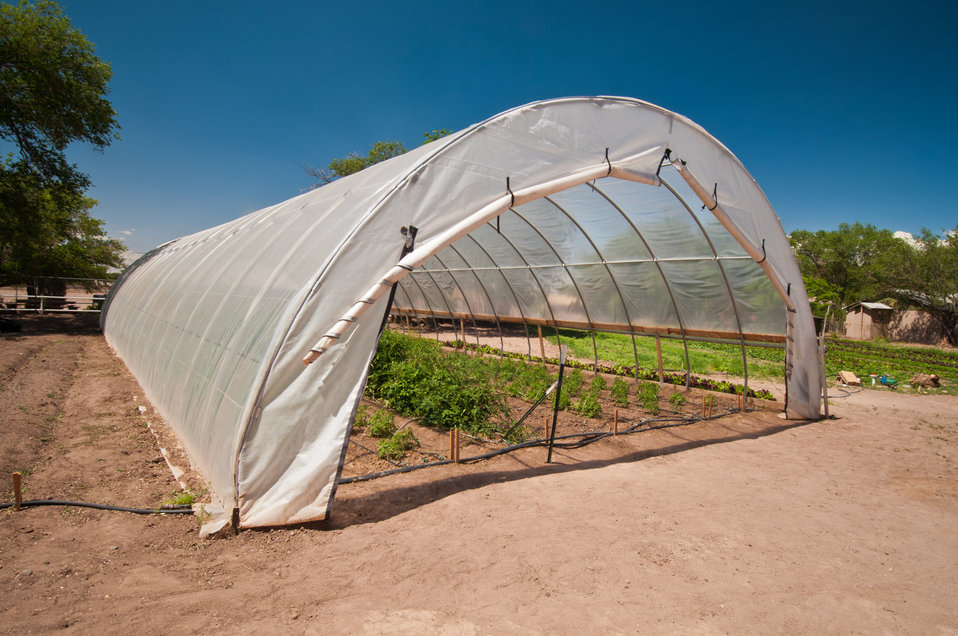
Local produce such as tomatoes and peppers are grown by Los Jardines Institute Farm, Albuquerque, NM. Los Jardines Institute Farm, a local sustainable farm, was able to construct a high tunnel house with a loan from the La Montanita Co-op. La Montanita Co-op offers loans to local farmers and food producers for development. La Montanita Co-op is a 17,000 member socially responsible, locally owned food cooperative that supports a stable market for local farmers and producers of sustainable and organic regional/local agriculture in Albuquerque, NM. The co-op has a distribution center and two stores in Albuquerque; Valley and Nob Hill and stores in Santa Fe and Gallup, NM.